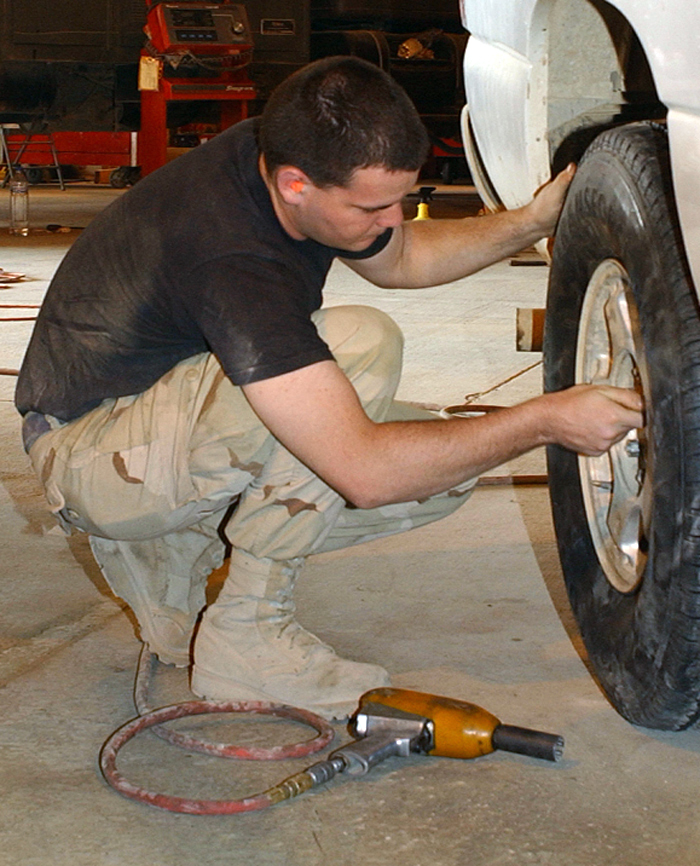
Tire repair

BALAD AIR BASE, Iraq -- Airman 1st Class Nicholas Cawley changes the tire on a truck. The Airman is with the 332nd Expeditionary Logistics Readiness Squadron here.